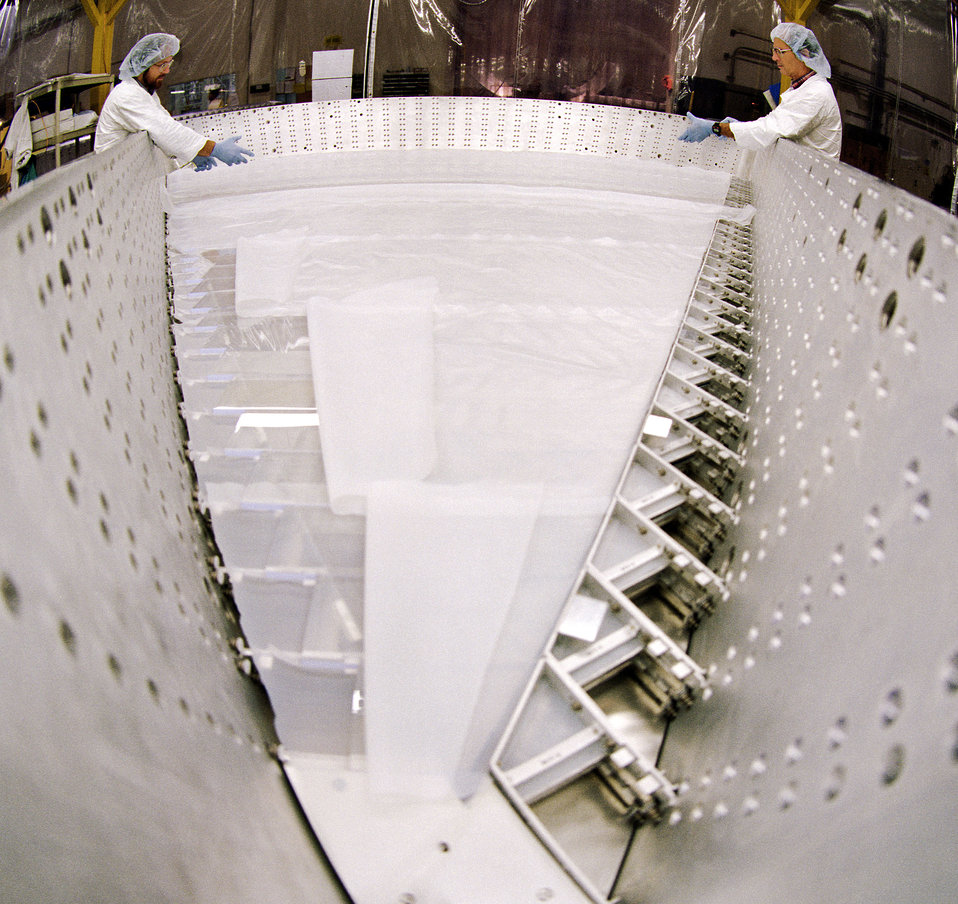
CEBAF Jefferson Lab Newport News

95 353 DOE photo by Lynn Freeny Newport News VA 8-24-1995